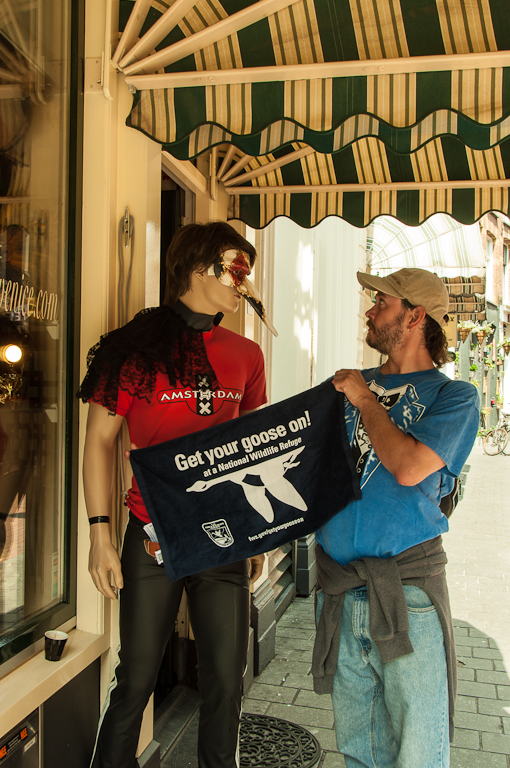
GYGO! Goes International!

A USFWS employee took some fun GYGO! photos while on vacation with family in Europe. Here's another one from Amsterdam!